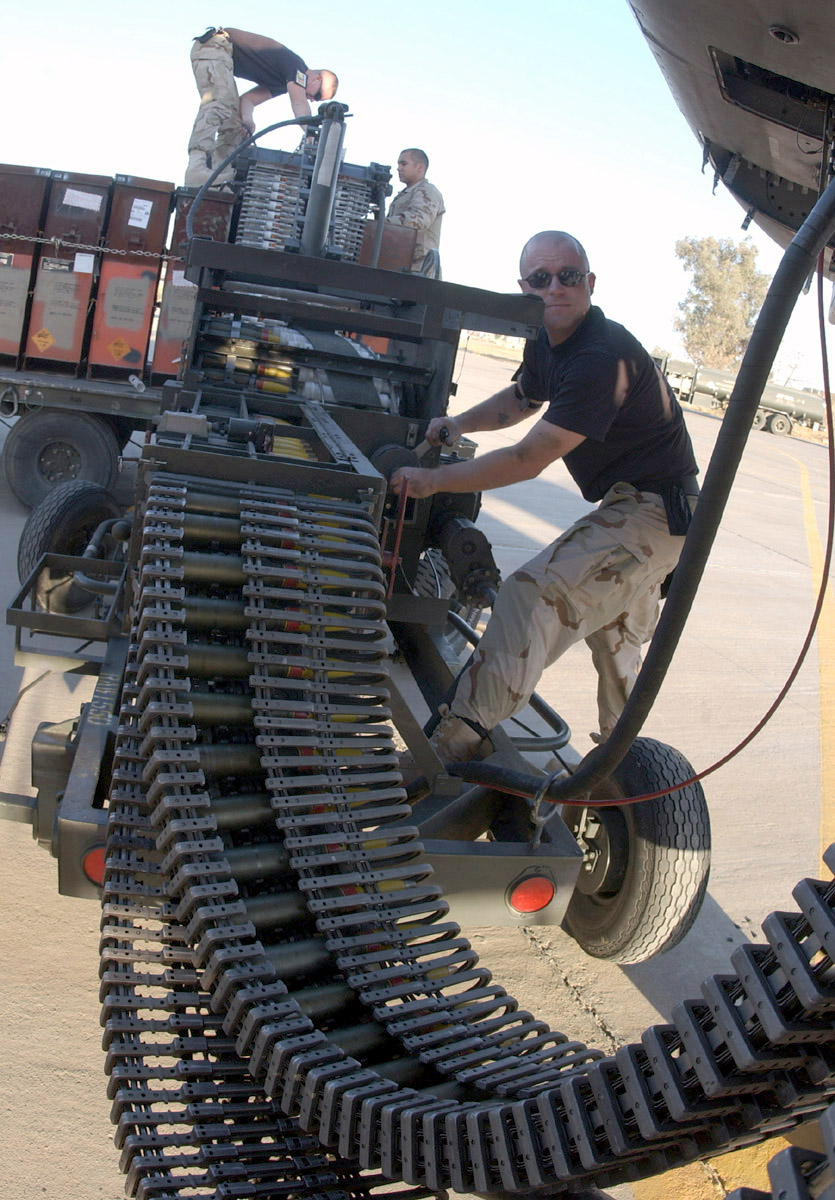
Load 'em up

KIRKUK AIR BASE, Iraq -- Staff Sgt. Donald Jepsen loads 30 mm ammunition into an A-10 Thunderbolt II here. The A-10s of the 354th Expeditionary Fighter Squadron were quickly prepared to fly missions supporting Operation Iraqi Freedom after their Nov. 22 arrival from Davis-Monthan Air Force Base, Ariz. Jepsen is the weapons team chief with the 355th Expeditionary Maintenance Squadron.